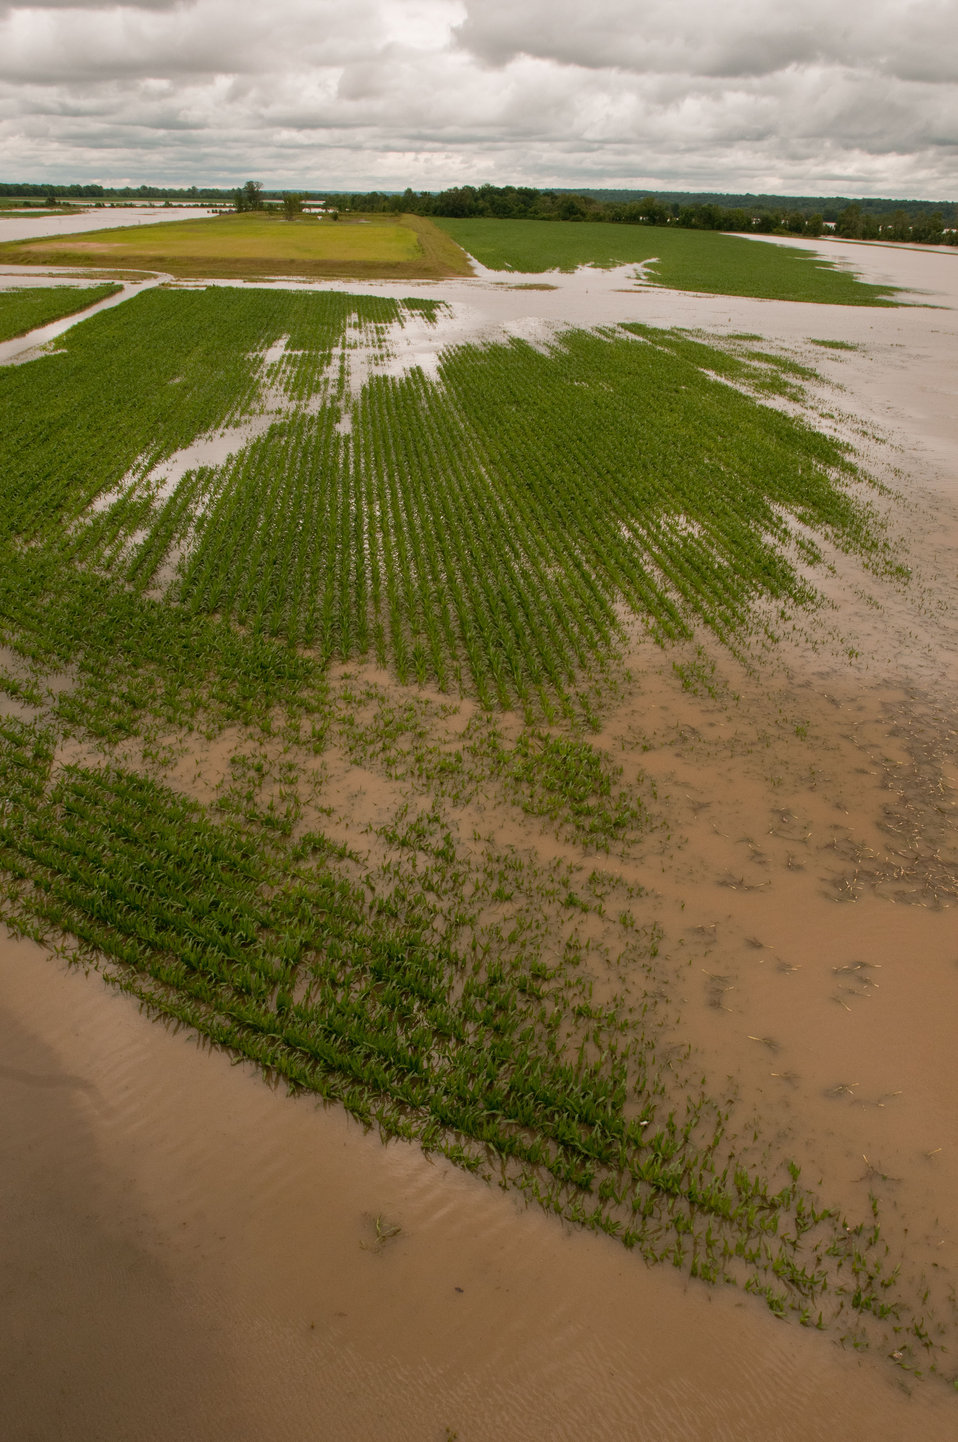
Mississippi River floodwaters have pushed into Yazoo River and into this cornfield near Yazoo City, MS, on Monday, May 16. 2011.